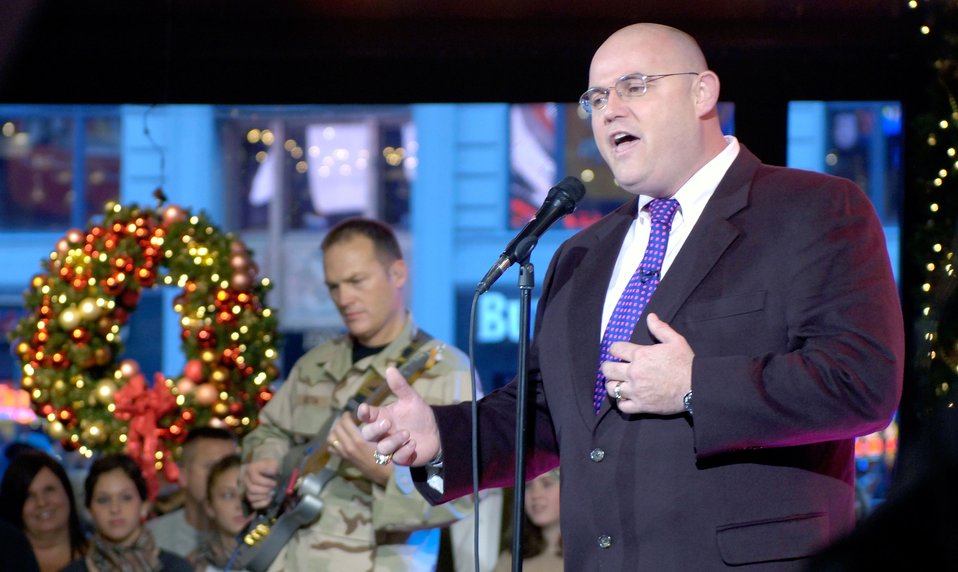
Good Morning America

A component of the U.S. Air Force Academy Band,